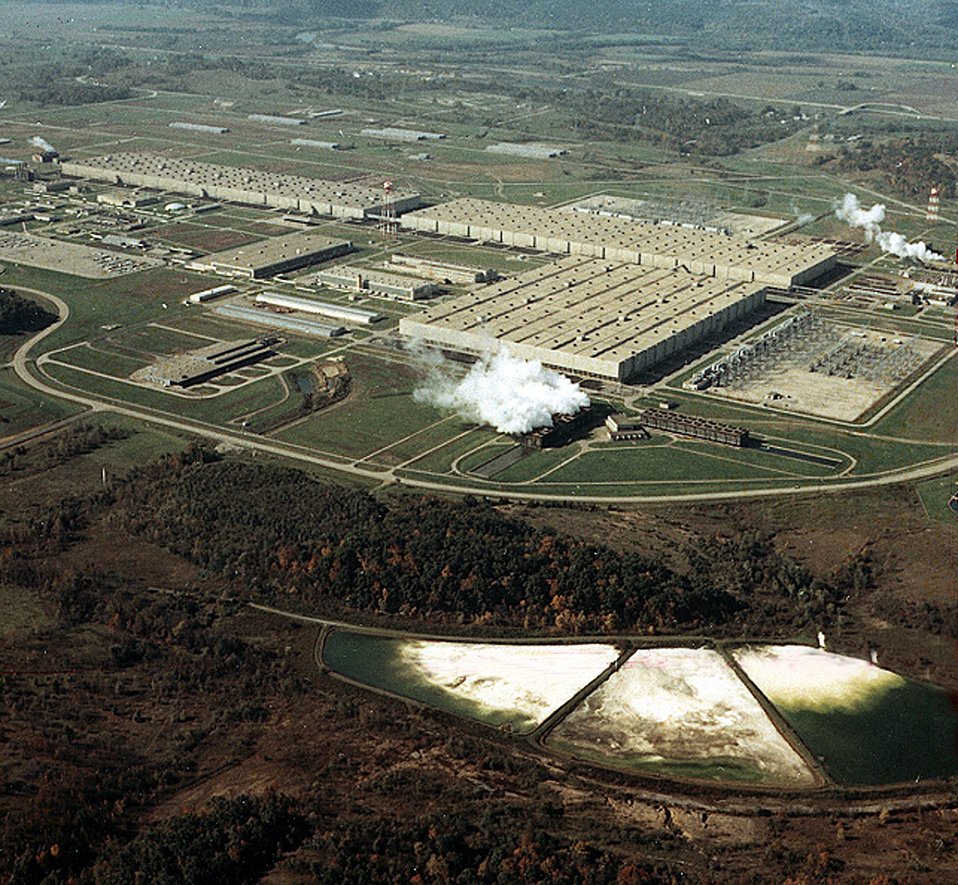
Portsmouth Gaseous Diffusion Plant. 10-16.70.